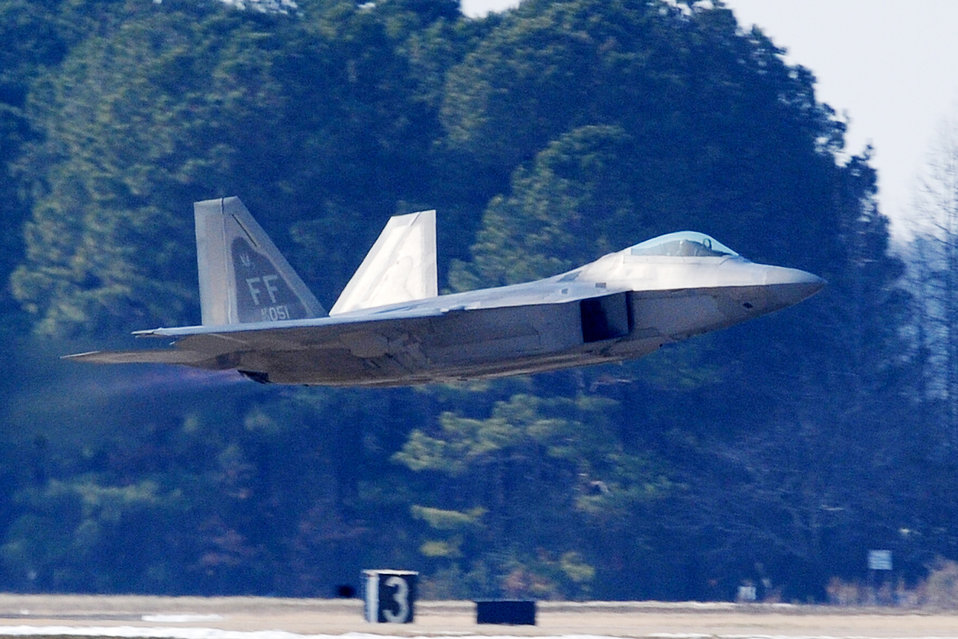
Demo teams receives 2010 certification

Maj. David Skalicky performs for Gen. William M. Fraser III Feb. 3, 2010, at Langley Air Force Base. Major Skalicky is an F-22A Raptor demonstration team pilot and General Fraser is the commander of Air Combat Command.